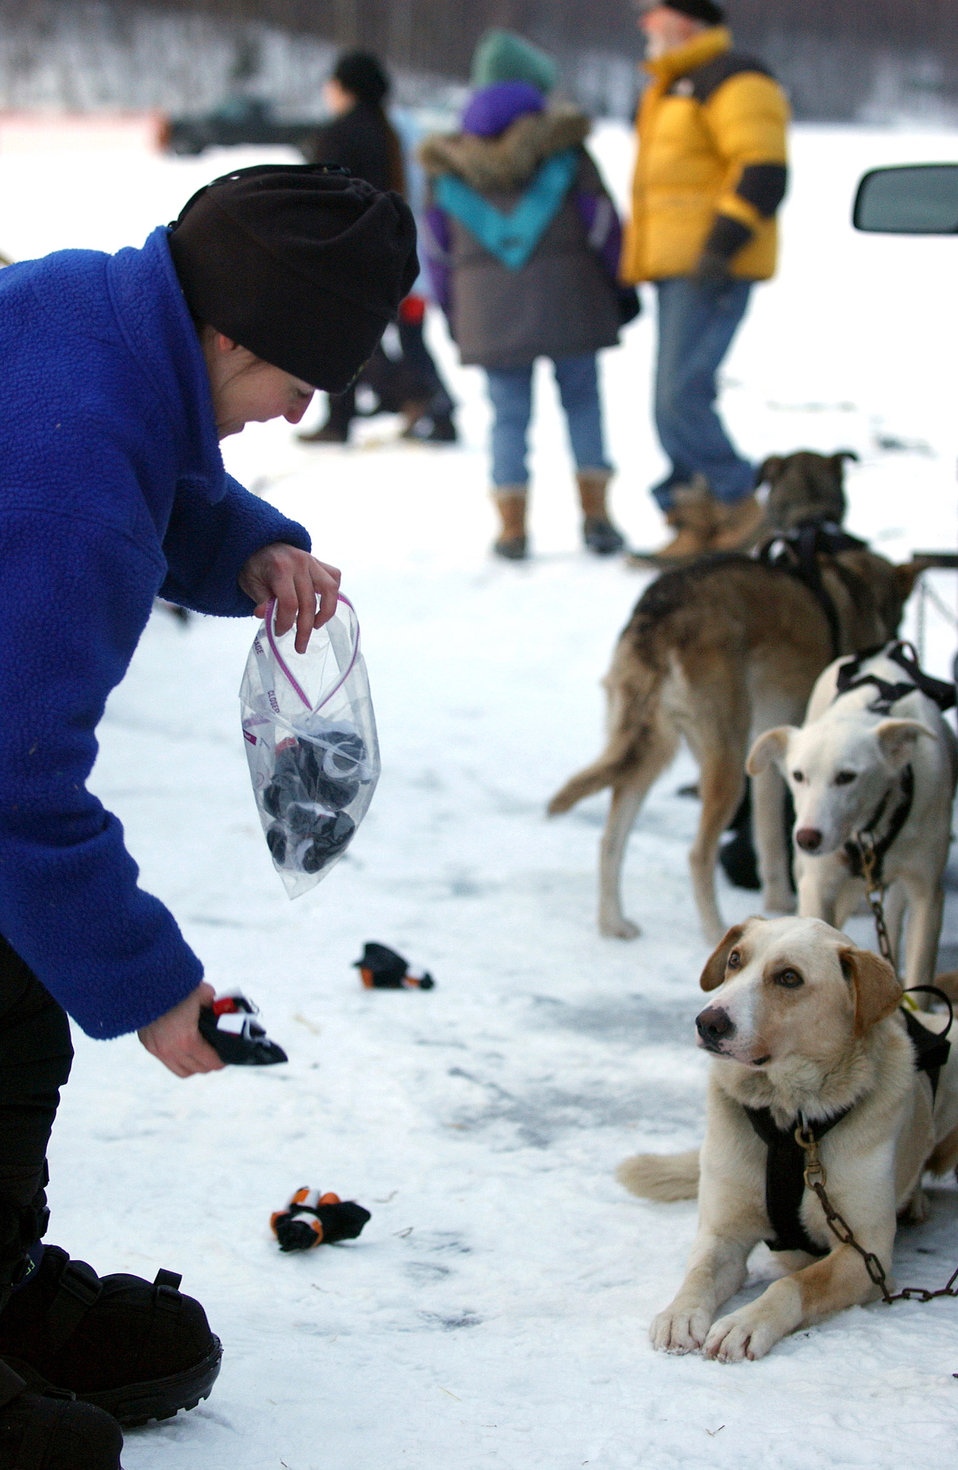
Winter race

KNIK, ALASKA (AFPN) -- Lt. Col. Michele Provost distributes booties for sled dogs before the start of the Knik 200 Sled Dog Race. It was the first time the colonel participated in a dog sled race. She completed the 200 mile race in 29 hours and 5 minutes, including a six-hour mandatory rest for the dogs. Colonel Provost is an orthopedic surgeon with the 3rd Medical Group at Elmendorf Air Force Base, Alaska. The dog sled team belongs to Maj. Tom Knolmeayer, Elmendorf's chief of surgery. He and his dogs completed last year's Iditarod Sled Dog Race -- a 1,100 mile race from Anchorage to Nome, Alaska.